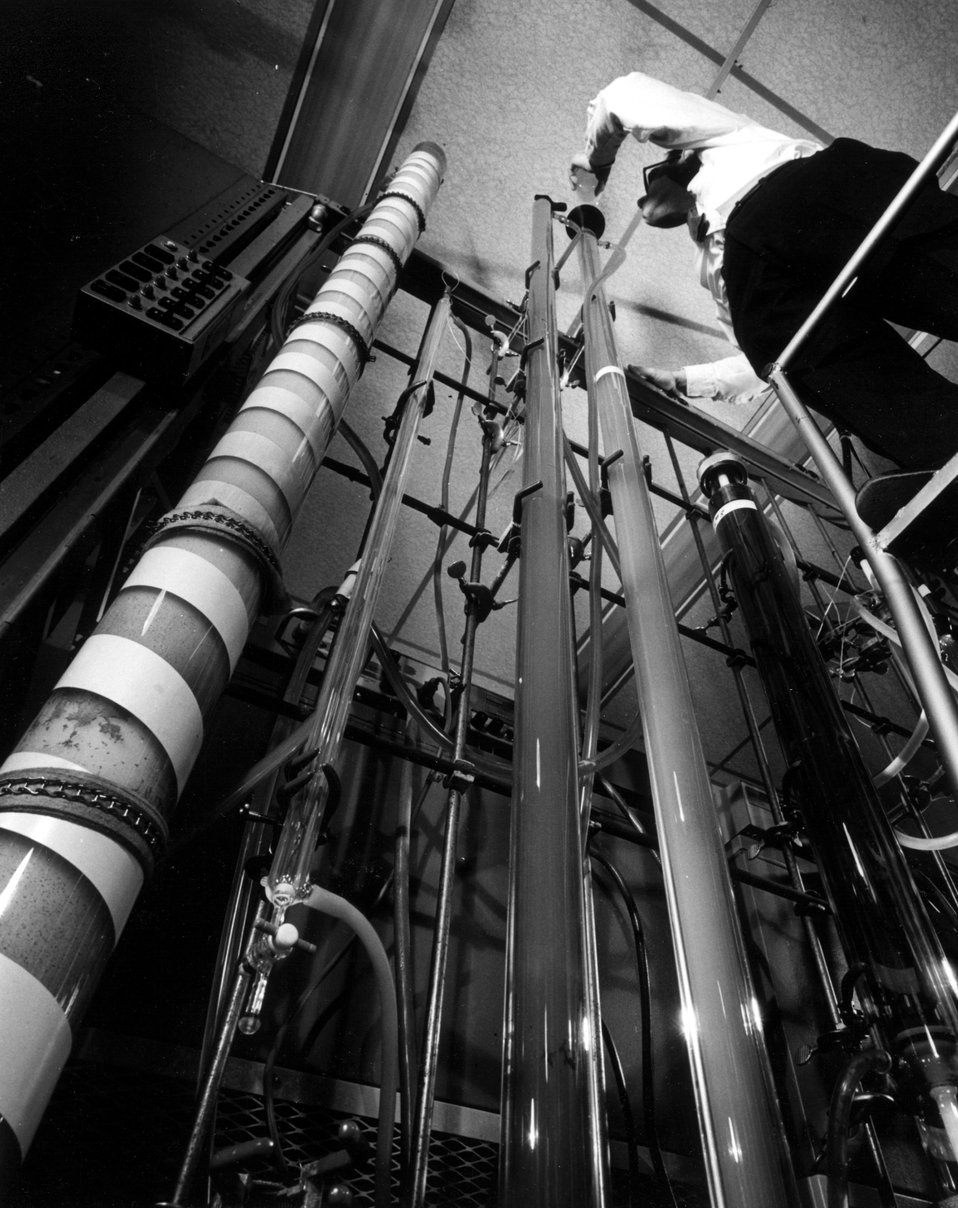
Laboratory biochemists, chemical engineers, and analytic chemists have joined forces to develop methods for isolation of individual species of transfer RNA (tRNA) in quantities large enough to permit determinations of the structure and function of each species. c. 1972